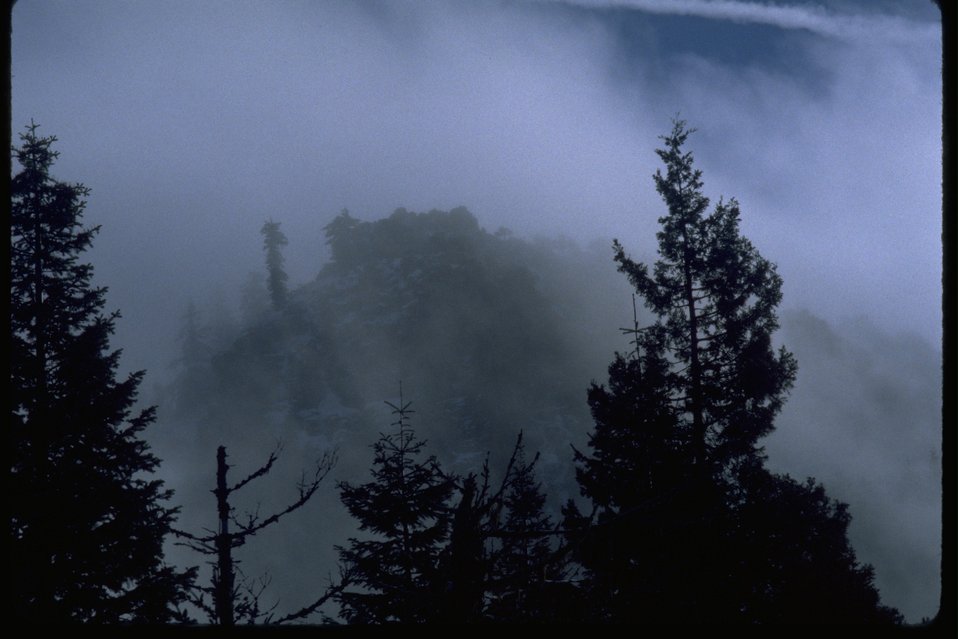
Hobart Bluff from Soda Mountain Road.